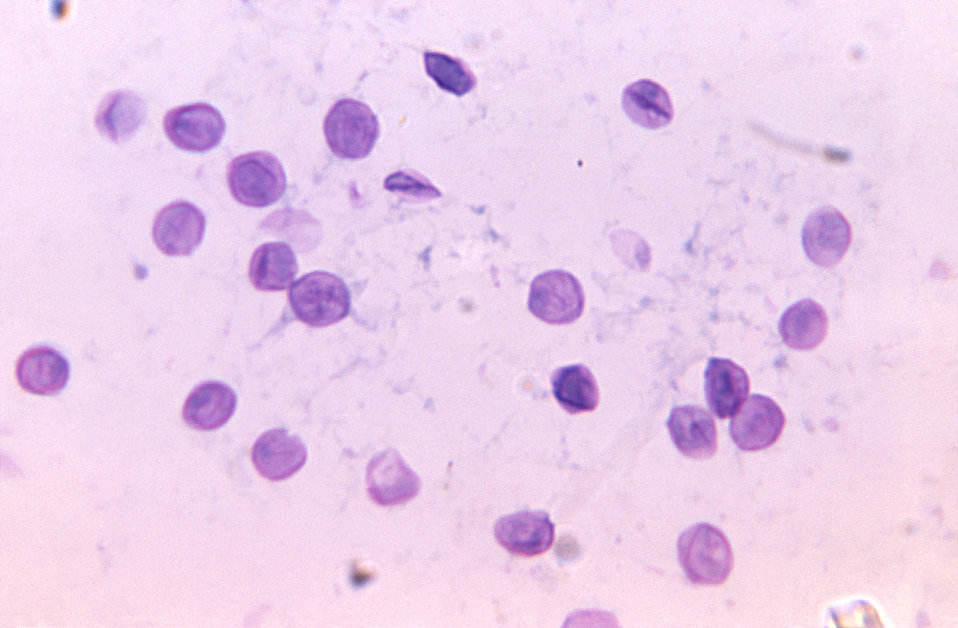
A photomicrographic image showing a concentration of Pneumocystis jirovecii, formerly known as Pneumocystis carinii fungi after a sonification process.